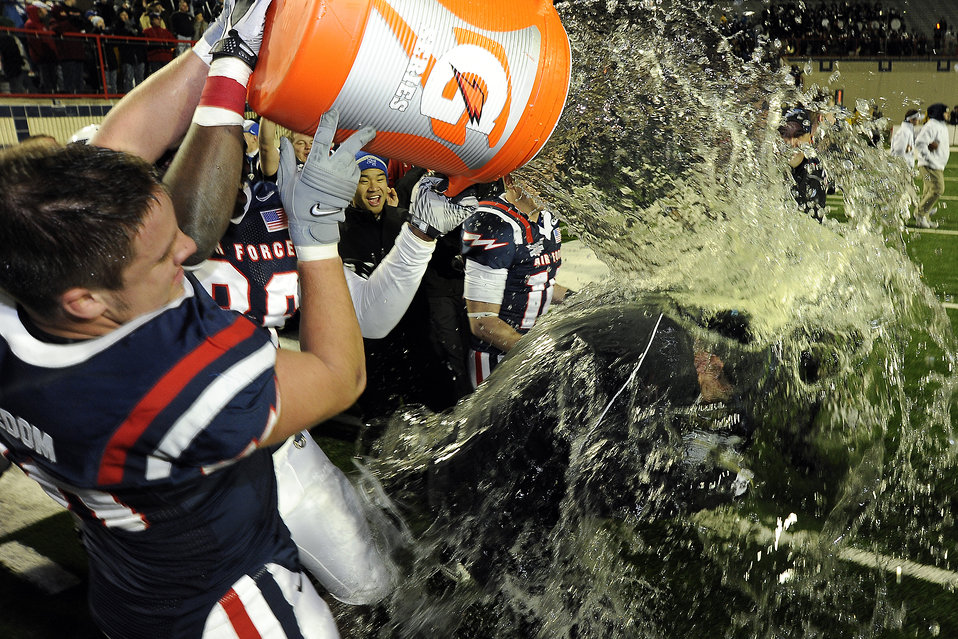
Falcons ground Yellow Jackets

Air Force players Rick Ricketts and Andre Morris Jr. douse head coach Troy Calhoun to mark the Falcons' 14-7 victory over the Georgia Tech Yellow Jackets in the Advocare V100 Independence Bowl Dec. 27, 2010, in Shreveport, La.